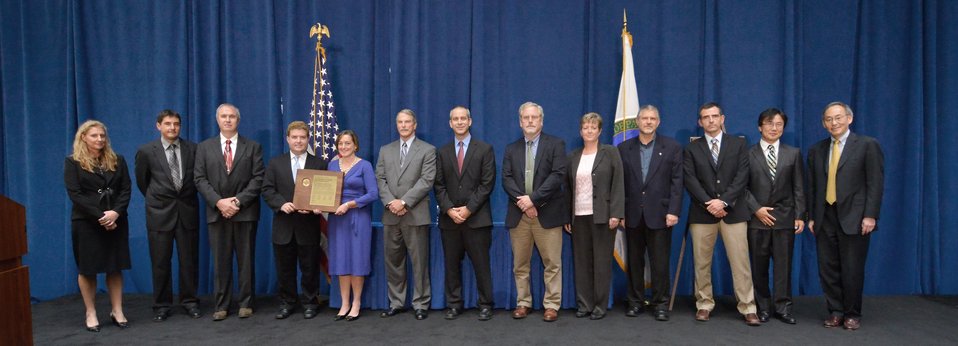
Mars Science Laboratory Multi-Mission Radioisotope Thermoelectric Generator

Awardees (not all pictured): Jeremy Anderson, David Armstrong, Ryan D. Bechtel, William A. Bohne, Christian Browning, Carla Dwight, Dirk A. Cairn-Gallimore, Alice K. Caponiti, Wade Carroll, Eric Clarke, Christina Edwards, Alejandro Enriquez, Carl Friesen, Scott Harlow, Steven Homann, Greg A. Hula, Stephen Johnson, Sue Ann Keller, Kristoffer Kelly, James King, Ronald Lipinski, Kelly Lively, John Matonic, Jamie Mitchell, Greg Moedl, Owen Lowe, Evan Ohriner, Colleen O’Laughlin, Chauncey Peters, Amy Powell, Alan Remick, Glenn Romanoski, Robin Stewart, Courtney Swassing, George Ulrich, Craig VanPelt, Darrell Wheeler, Won S. Yoon. Between late June and late November of 2011, the Mars Science Laboratory Multi-Mission Radioisotope Thermoelectric Generator team delivered the Multi-Mission Radioisotope Thermoelectric Generator for the National Aeronautics and Space Administration's Mars Science laboratory mission, which launched on November 26, 2011. Much planning went into the delivery of the unit, supporting a “hot fit check' with the Jet Propulsion Laboratory supplied rover, Curiosity, in early July, and careful monitoring of the power system until final integration with the rover in mid-November. Activities included implementing a documented safety analysis for three temporary nuclear facilities at Kennedy Space Center, implementing a rigorous Unreviewed Safety Question process for Department of Energy’s Kennedy Space Center and Jet Propulsion laboratory procedures, and actively participating in radiological contingency planning and Implementation for launch.